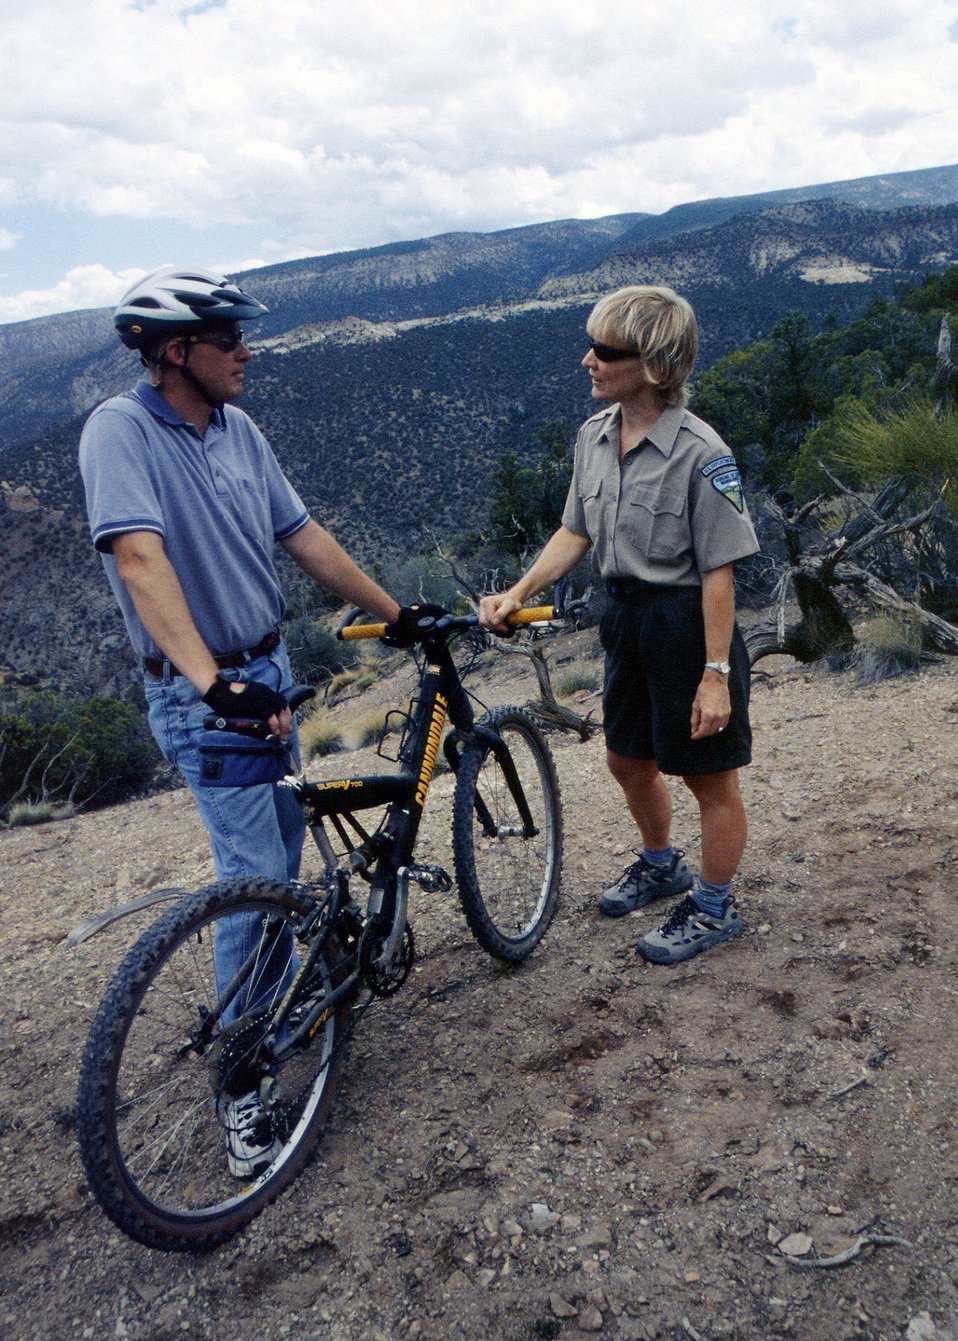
Mountian biking